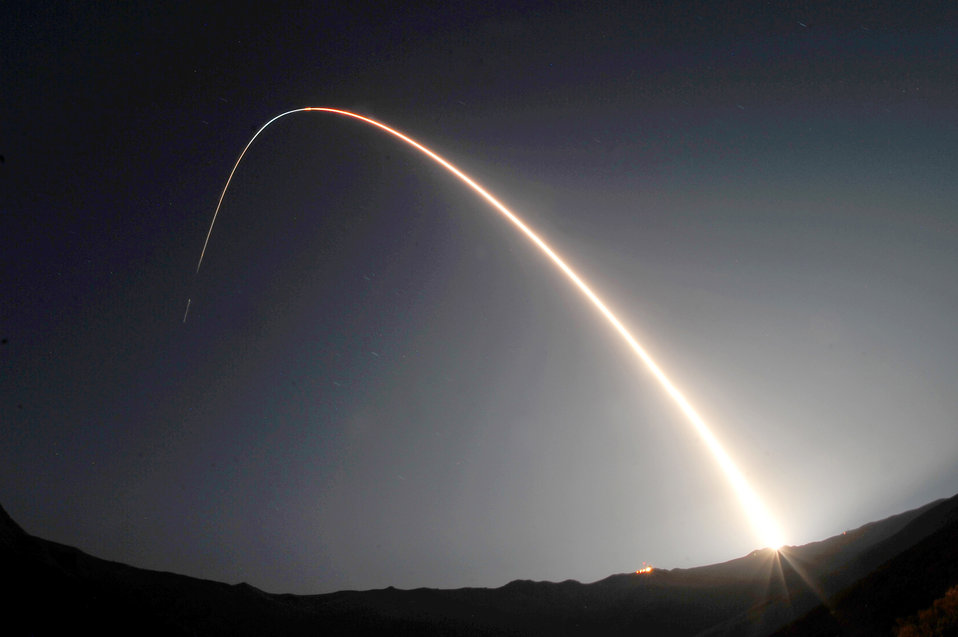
To infinity and beyond!

A Minotaur IV rocket makes an arc as it is launched Sept. 25, 2010, at Vandenberg Air Force Base, Calif. The Minotaur IV launched the Space-Based Space Surveillance satellite, a satellite that can detect and track orbiting objects from space.